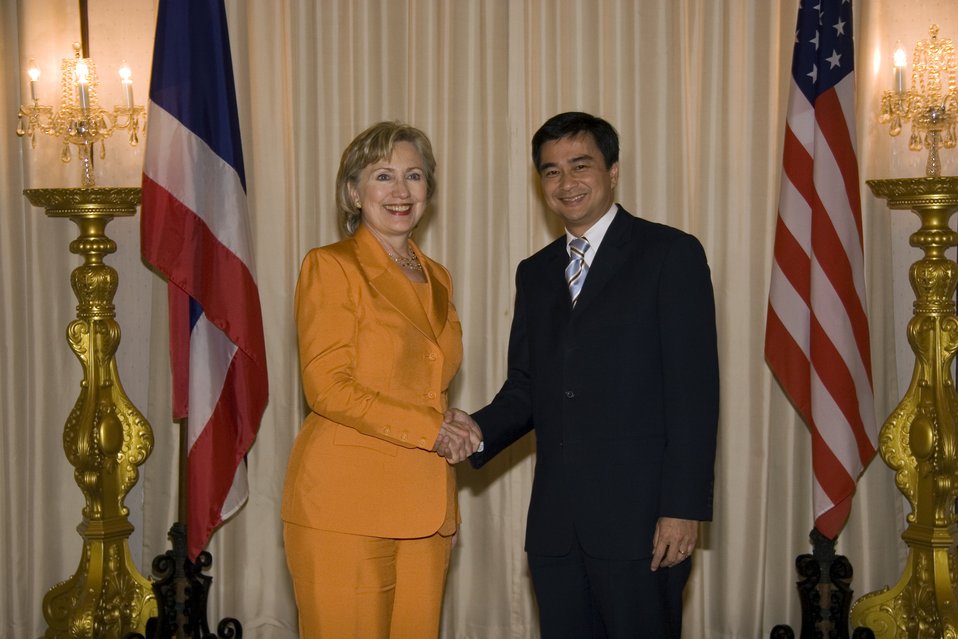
U.S.-Thailand Bilateral Meeting

U.S. Secretary of State Hillary Rodham Clinton shakes hands with Thai Prime Minister Abhisit Vejjajiva prior to the bilateral meeting at Government House in Bangkok, Thailand July 21, 2009.